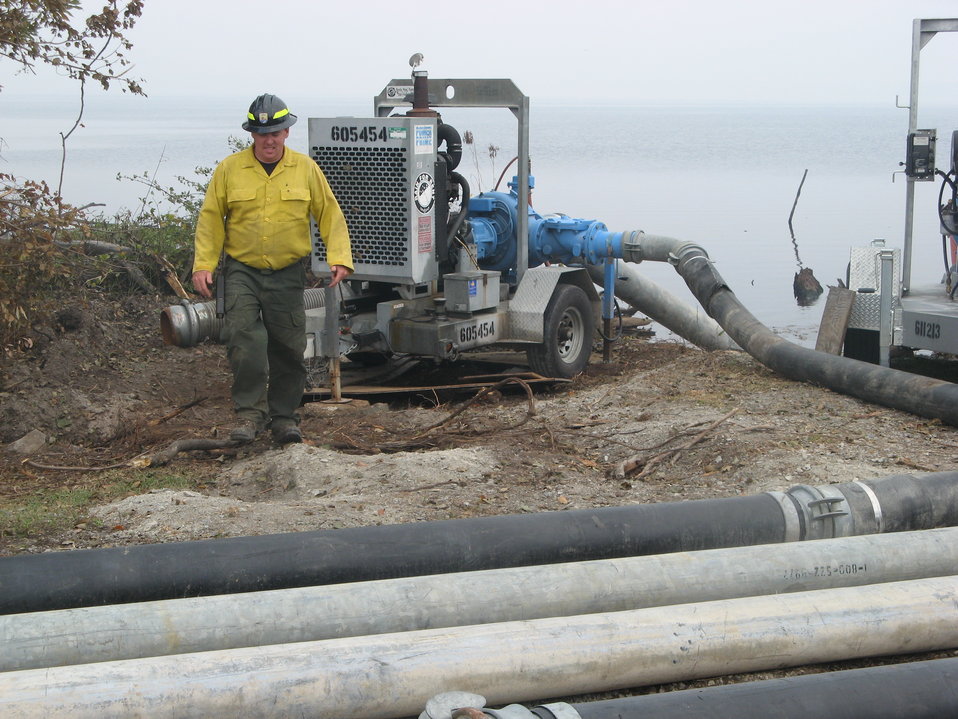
Waterworks Lake Drummond

Suffolk, VA, August 2011:U.S. Fish and Wildlife Service firefighter Jon Wallace inspects pumps at Lake Drummond. The pumps draw water from the lake to flood swamp ditches. A system of pipes and sprinklers will be used to flood the Lateral West Fire.